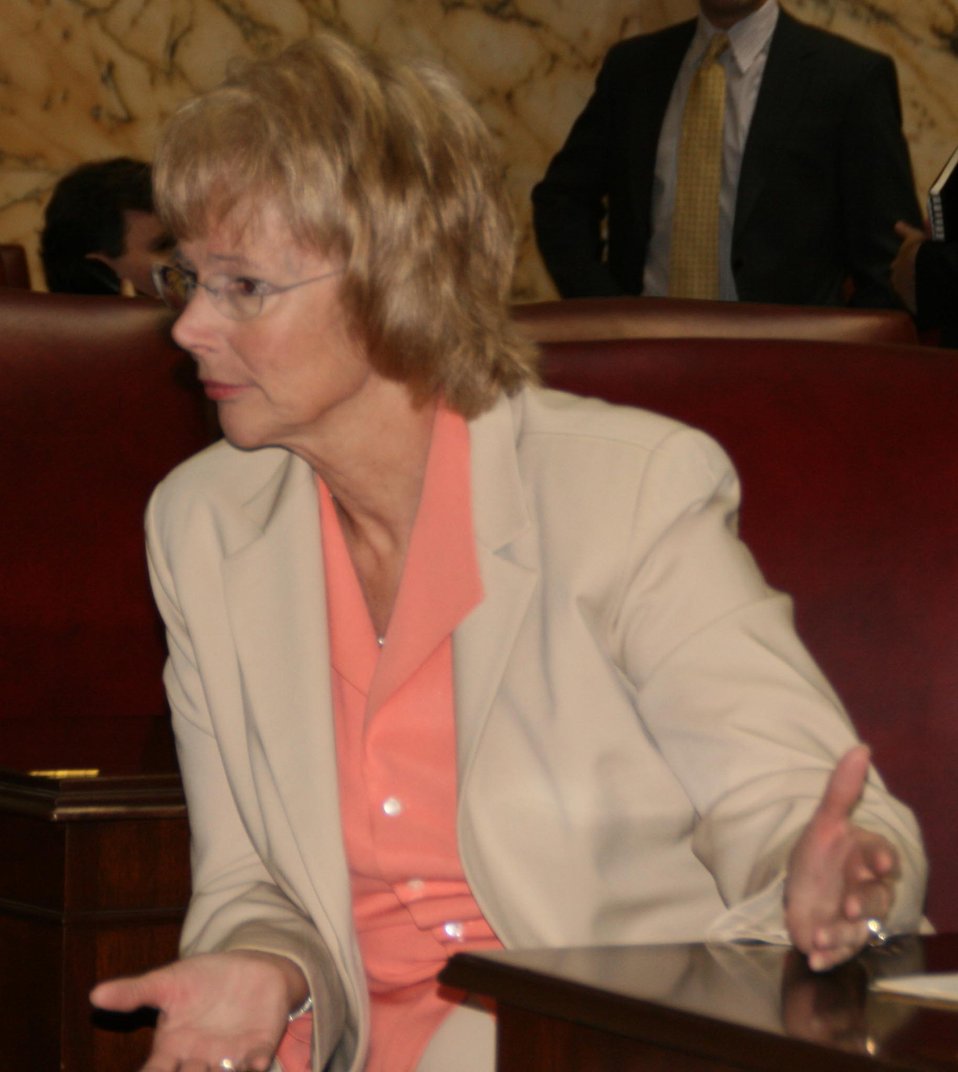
sen. jacobs